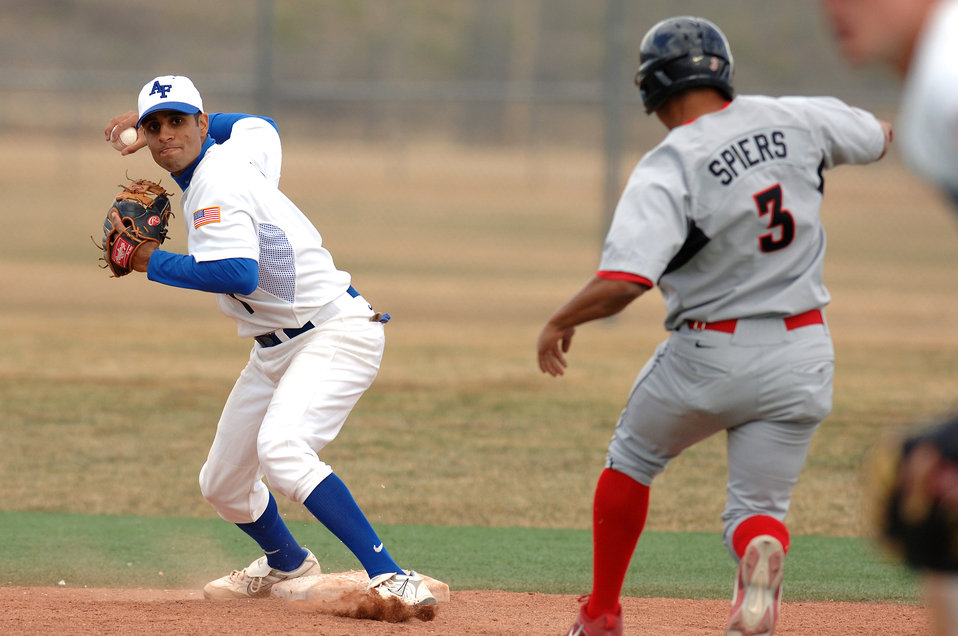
San Diego defeats Falcons

Freshman shortstop K.J. Randhawa throws to first to complete a double play during the 12-9 loss to San Diego State March 22.